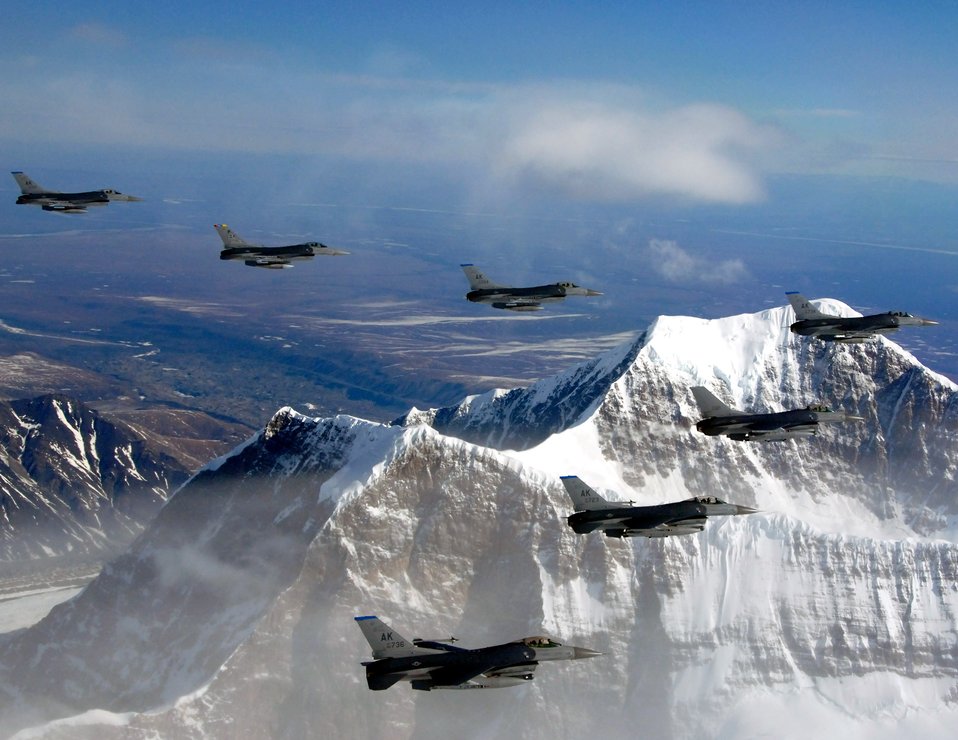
Show of force

F-16 Fighting Falcons fly in formation April 25 over the Pacific Alaska Range Complex. The F-16s are from the 18th Fighter Squadron at Eielson Air Force Base, Alaska.